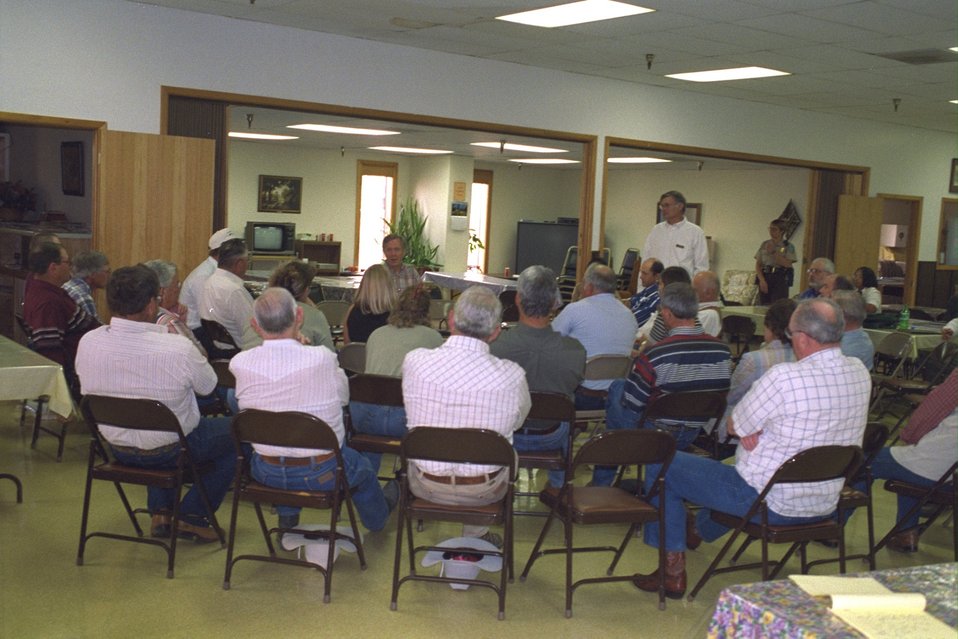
Town meeting to discuss Steens designation with Secretary Babbitt in Burns, OR.